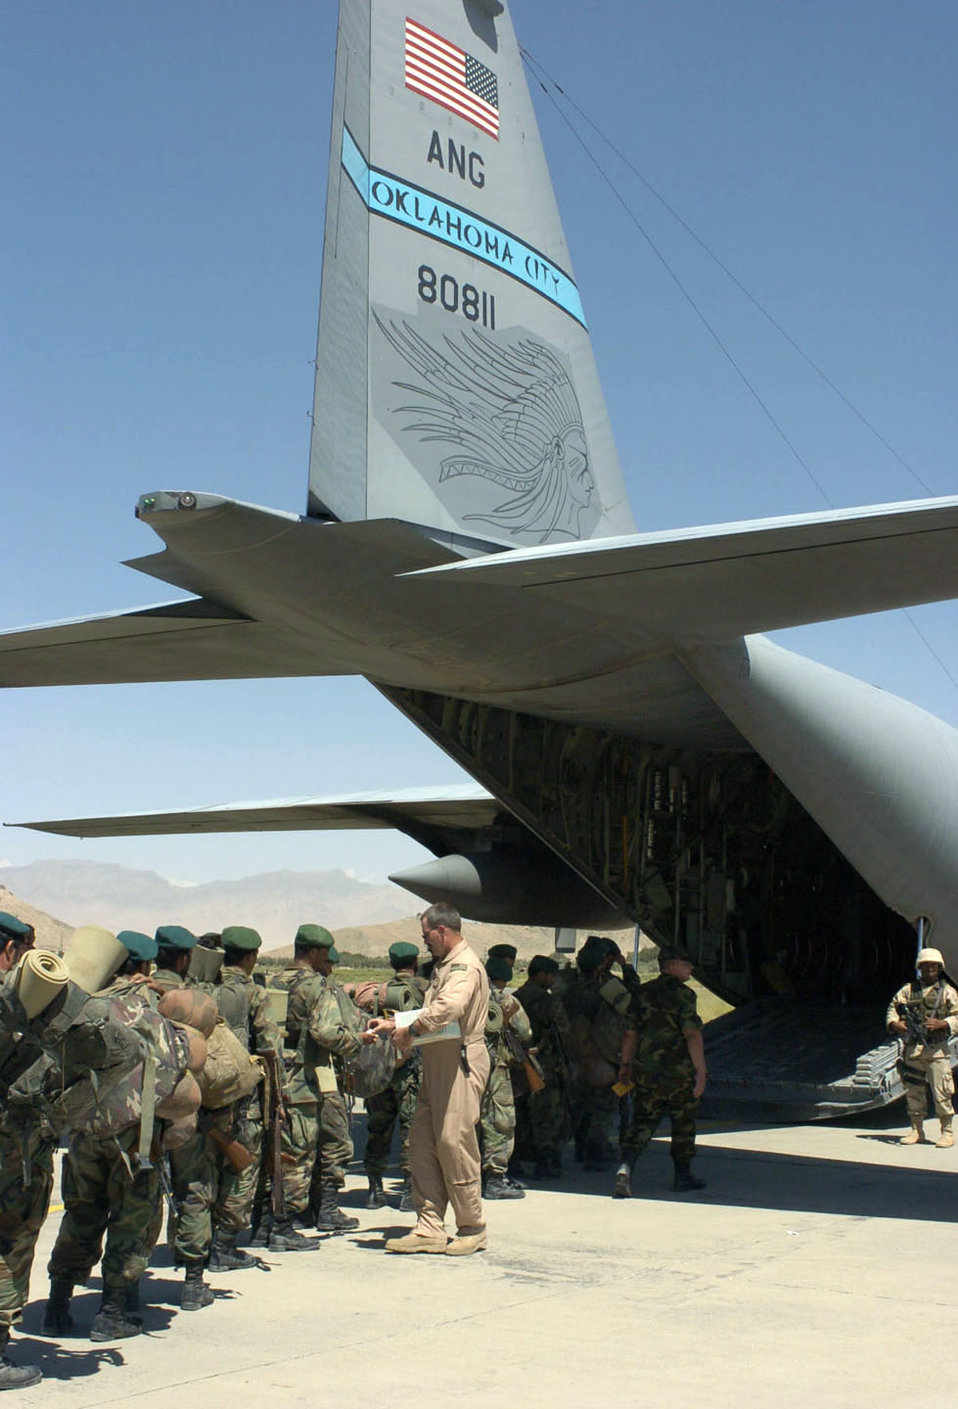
Afghan support

KABUL, Afghanistan -- Tech. Sgt. Tim Watts passes out ear plugs to Afghan soldiers waiting to board a C-130 Hercules on Aug. 15 at Kabul International Airport here. The Oklahoma Air National Guard aircraft and crew helped airlift several Afghan battalions to Shindand to retake control of government property seized as a result of factional fighting in the area. Sergeant Watts is an Oklahoma ANG C-130 aircrew member.